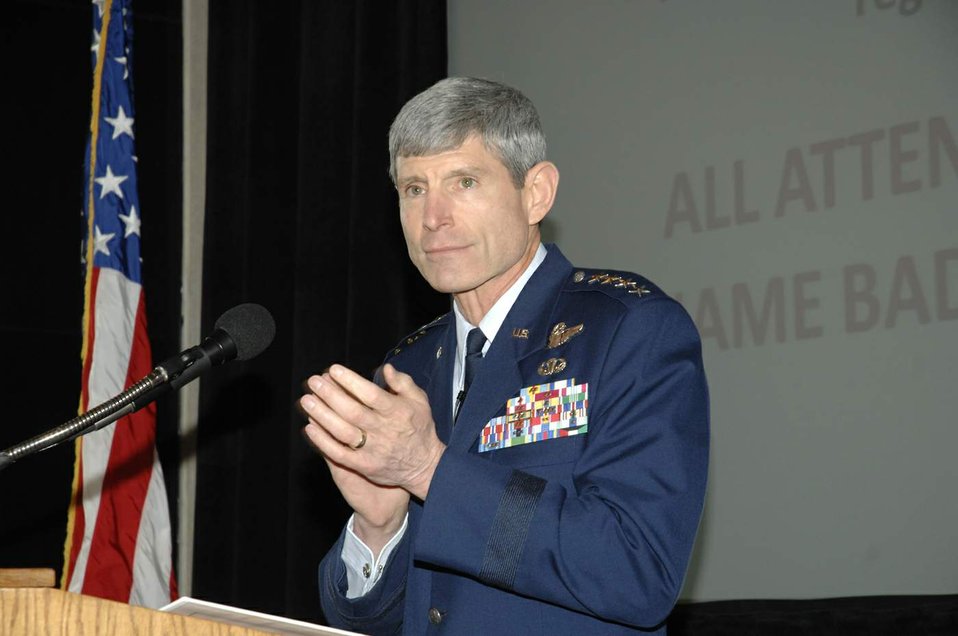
CSAF at acquisition conference

Gen. Norton Schwartz, Air Force chief of staff, speaks to an assembly of some 700 Air Force acquisition professionals and defense industry partners April 21 during DOD Acquisition Insight Days at Sinclair Community College in Dayton, Ohio. The event, organized by officials at Defense Acquisition University - Midwest Region, provided senior leader perspectives, workshops and training focused on delivering war-winning capabilities for joint warfighters.